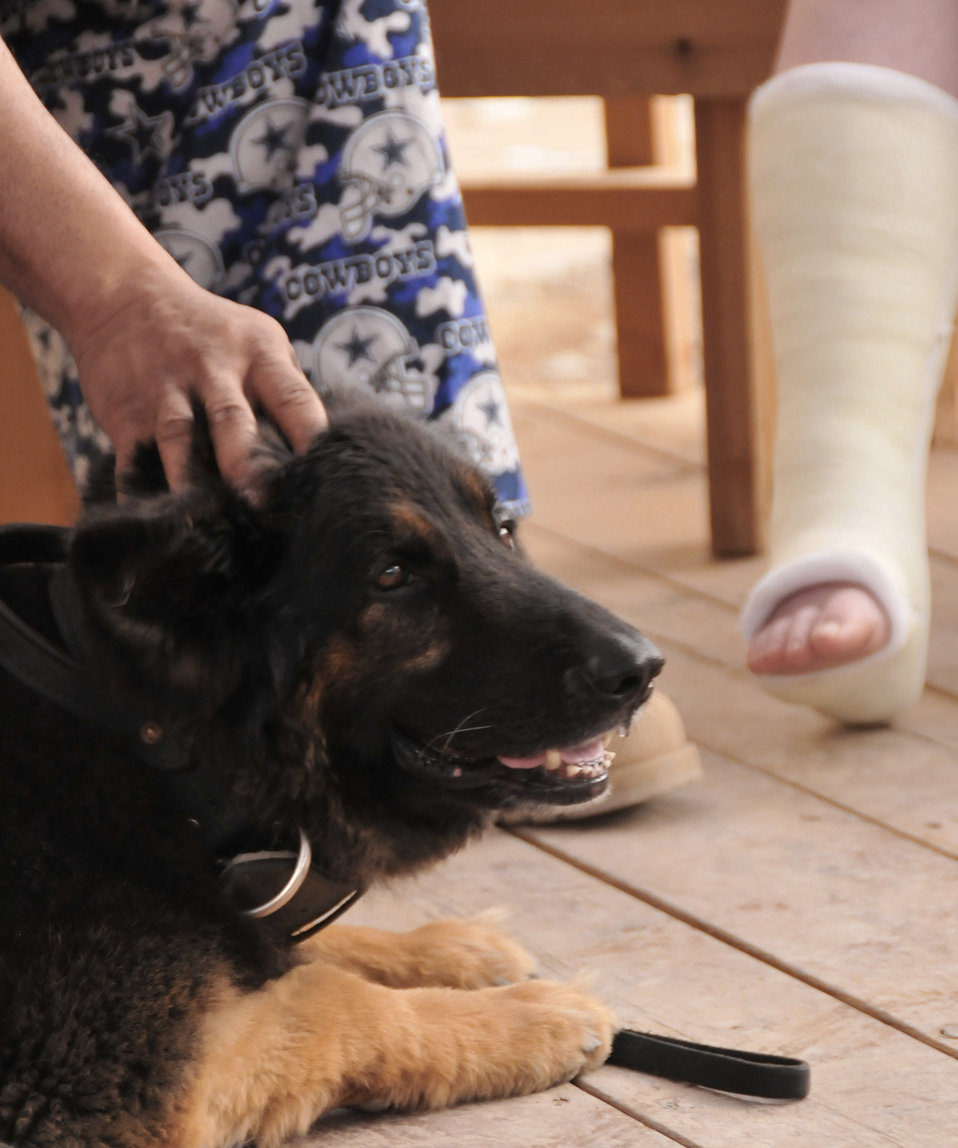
Airmen 'unleash' new recovery program for patients

332nd Expeditionary Security Forces Group explosives-detection military working dog Cezar enjoys having his ears scratched as he sits at the feet of an Air Force Theater Hospital patient May 15 at Joint Base Balad, Iraq. Cezar was one of two military working dogs that participated in the newly created K-9 Visitation Program at the AFTH. The program works to further patient recovery after injury or illness through animal-assisted therapy. Patients are able to interact with the K-9s and their handlers twice a month. Cezar is deployed here from McGuire Air Force Base, N.J.